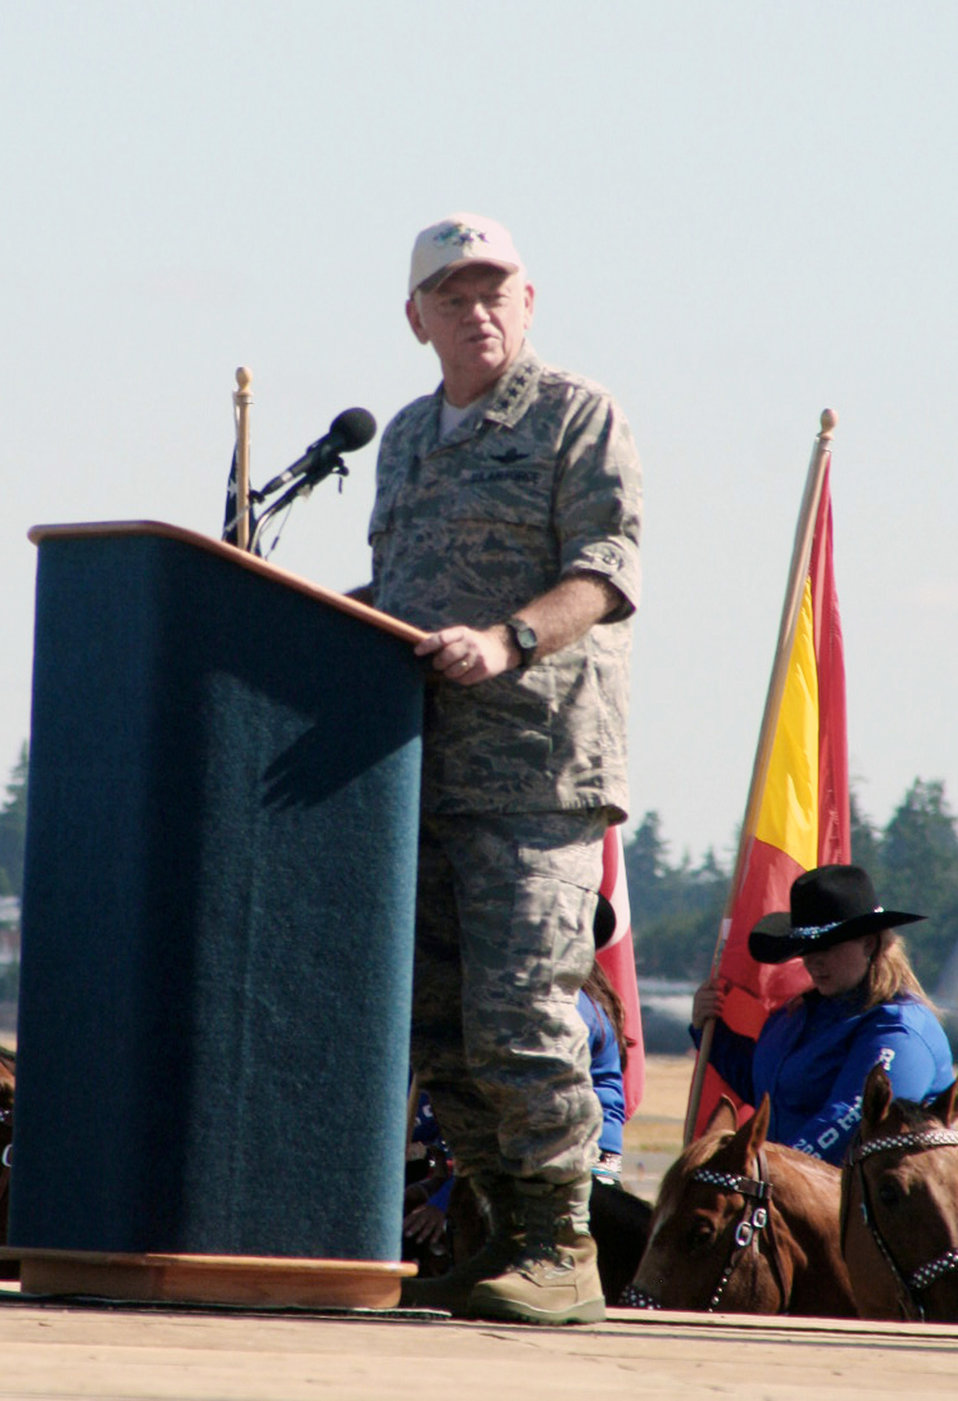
AMC commander: Rodeo beneficial in more ways than 1

Gen. Arthur J. Lichte provides remarks during opening ceremonies for the Air Mobility Rodeo 2009 July 19 at McChord Air Force Base, Wash. More than 100 teams are participating in RODEO competition, including teams from seven foreign countries. General Lichte is the commander of Air Mobility Command.